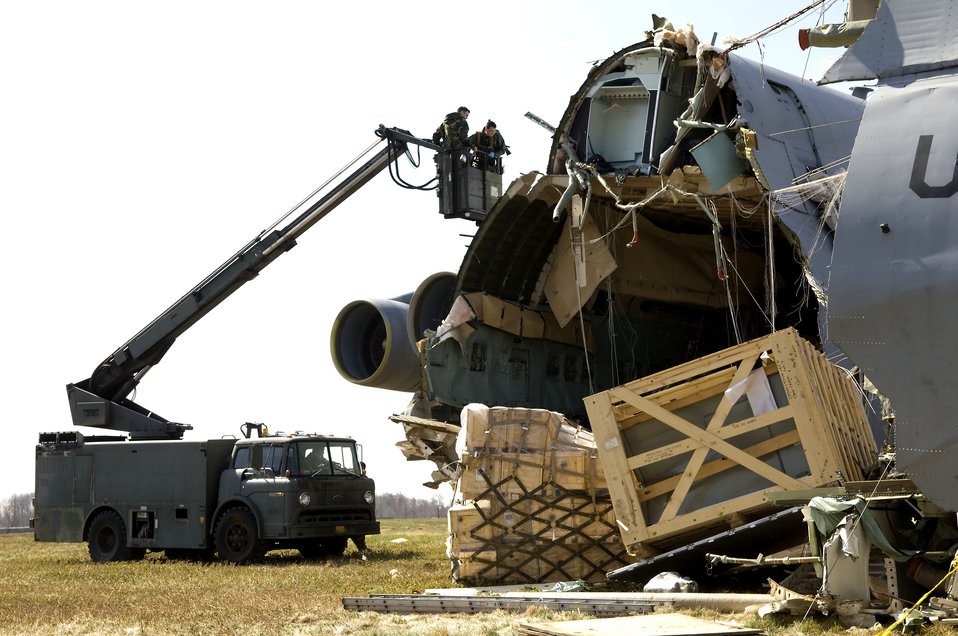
C5 crash site: de-fuel preparation

Staff Sgts. John Thomas (left) and Edward Carmack survey the damage as Staff Sgt. Michael Hull moves the truck closer to the wreckage of a C-5 Galaxy that crashed at Dover Air Force Base, Del., on Monday, April 3, 2006. Sergeant Thomas is with the 436th Maintenance Squadron, Sergeant Carmack is with the 512th Aircraft Maintenance Squadron and Sergeant Hull is with the 436th AMXS.